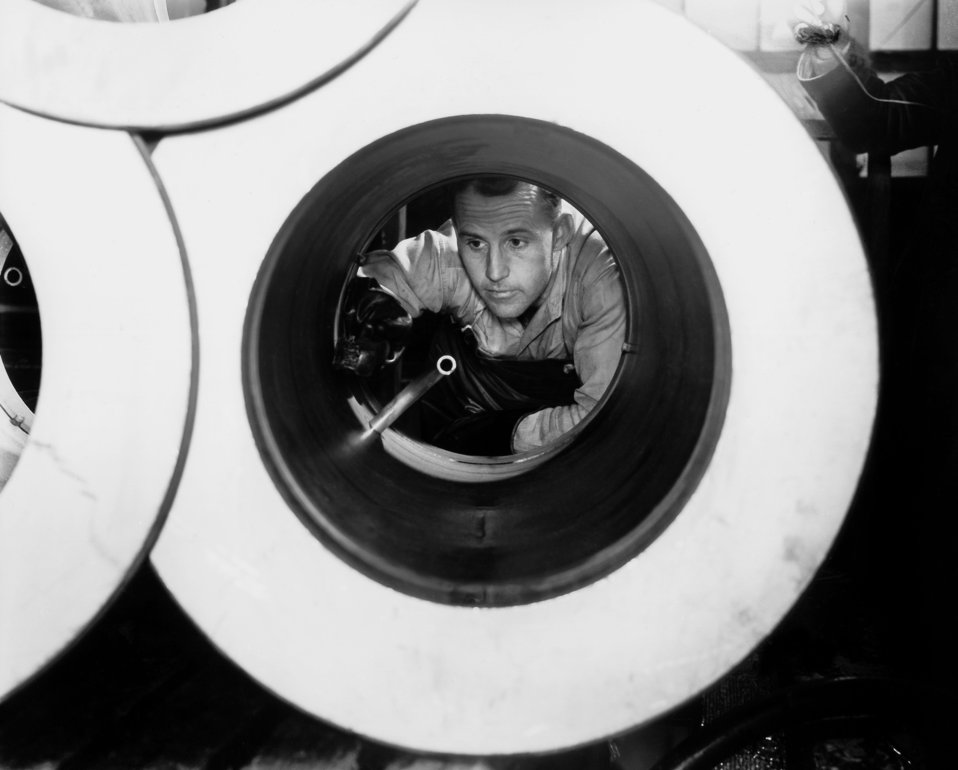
Worker at K-25 Plant Oak Ridge

K-25-20 DOE photo by Ed Westcott

Worker at K-25 Plant Oak Ridge Tennessee 1945